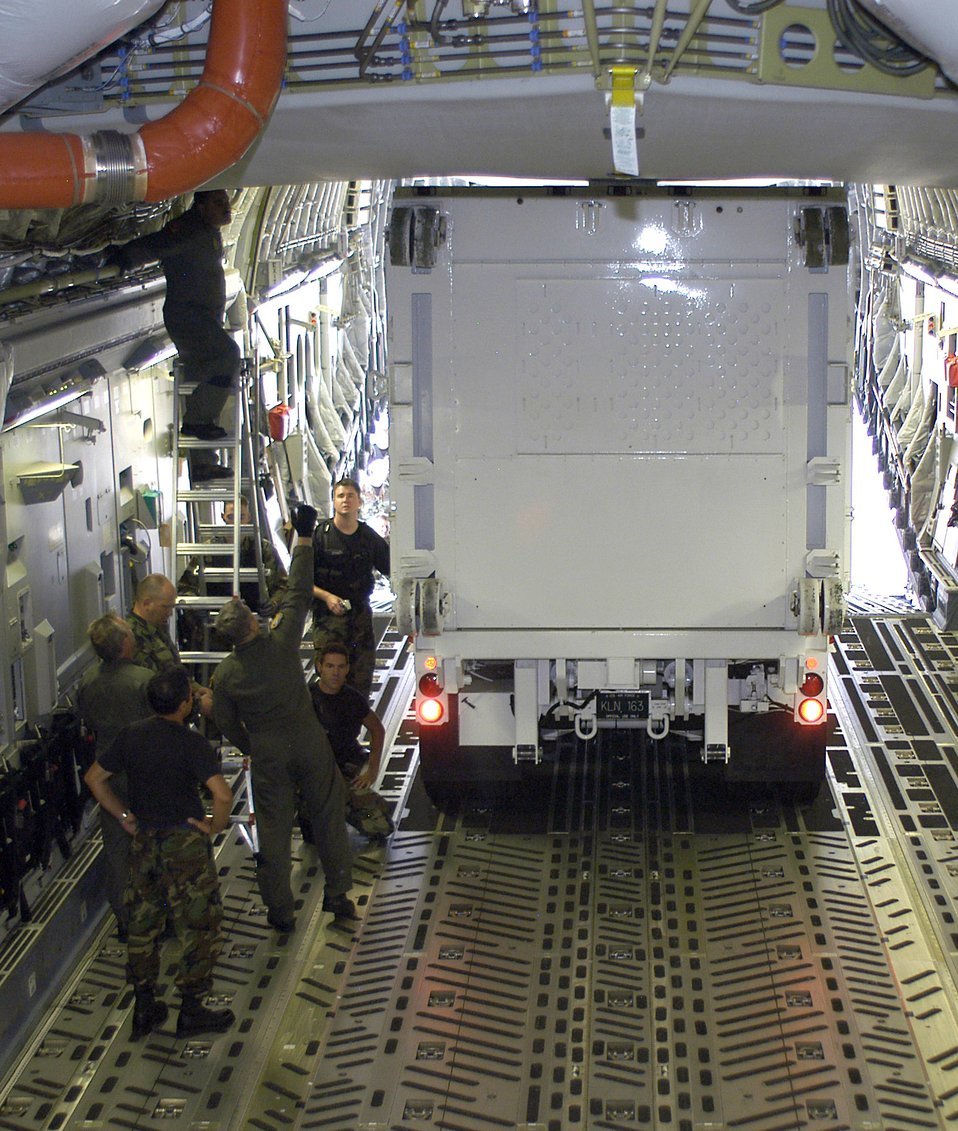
Tight fit for GM-3 will save $360K per flight

Airmen monitor the 4th Space Operations Squadron's Ground Mobile-3 vehicle as it backs into a C-17 Globemaster III cargo bay at Peterson Air Force Base, Colo., Sept. 10. Deploying the GM-3 on a C-17 instead of a C-5 Galaxy will save the Air Force more than $360,000 per flight.